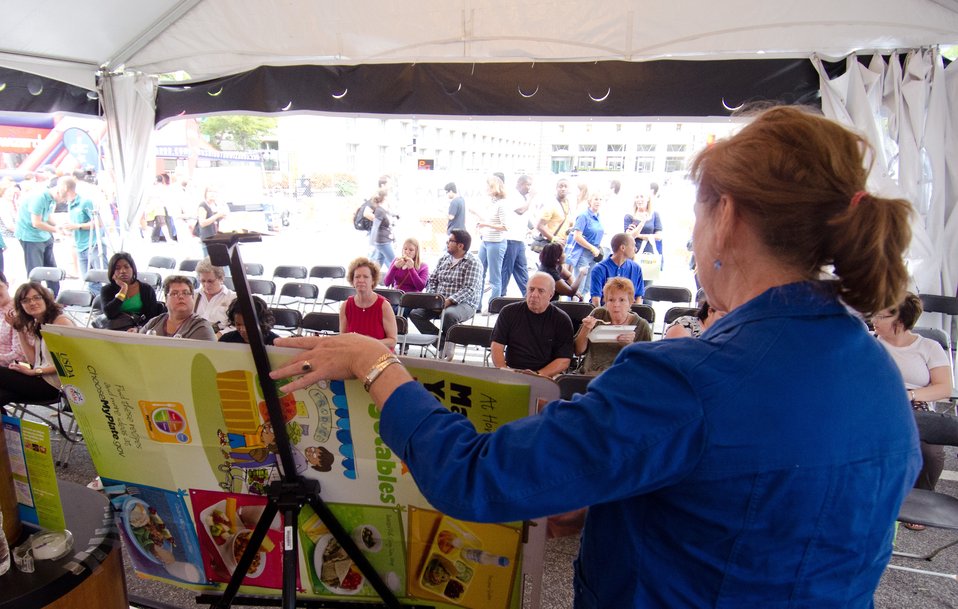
Elaine McLaughlin holds her flipchart of made of available presentation pages and created others by printing out and tapeing them together to create display panels that help her talk about “My Plate” and many ways people can access nutrition information and suggests how the information can help them live healthier lives, during her presentation at the Taste of D.C., event that highlights more than 70 eateries, 30 specialty beer providers, the United Service Organization (USO) Metropolitan Washington, and live bands. It is anticipated that more than 500,000 people will attend over the course of the three-day event, which extends from the White House to the Capitol, along Pennsylvania Ave. in Washington D.C. on Saturday, October 6, 2012. Agriculture Food Safety and Inspection Service specialists presented additional talks and cooking demonstrations during the event. The Agriculture’s mobile Discovery Zone was on hand to educate children and parents about the four main principals of food safety – clean, separate, cook and chill.